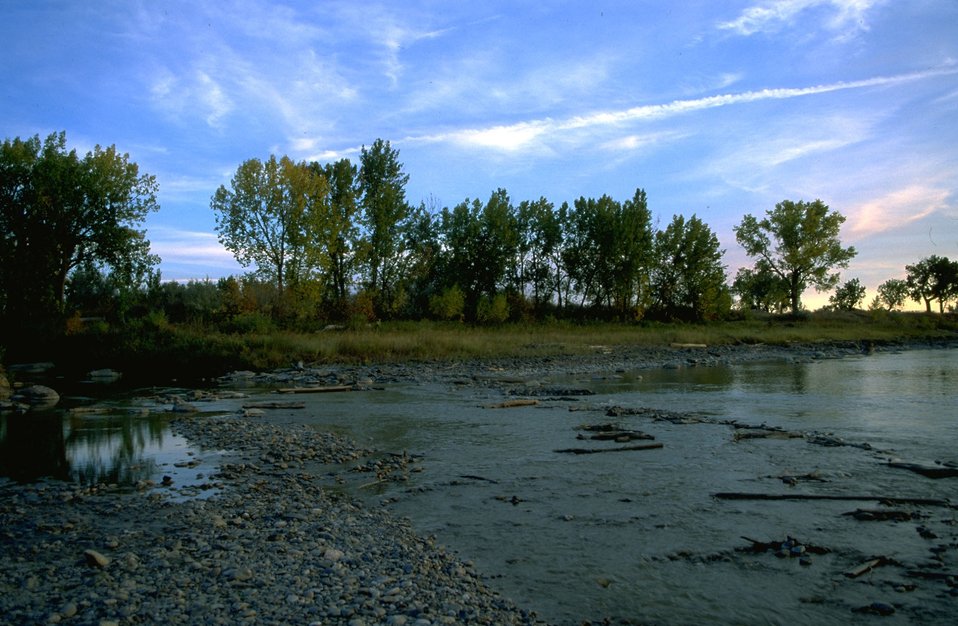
Confluence of Jones Creek and Yellowstone River at Matthews Recreation Site